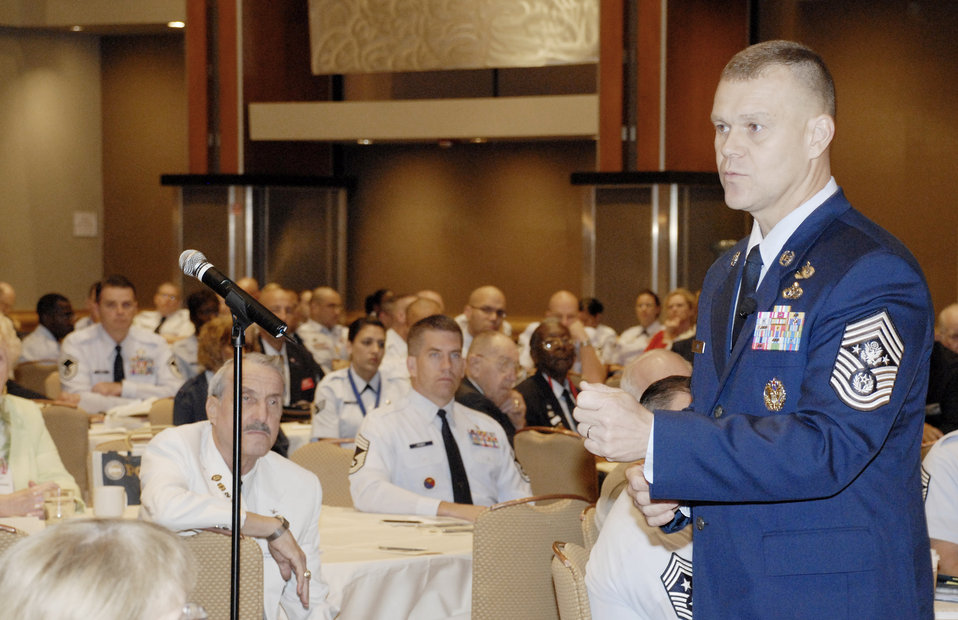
CMSAF addresses AFSA conference

Chief Master Sergeant of the Air Force James Roy speaks to an Air Force Sergeants Association Professional Airmen's Conference audience Aug. 18 in Atlanta, during which he praised the enlisted force and highlighted several of his key priorities.